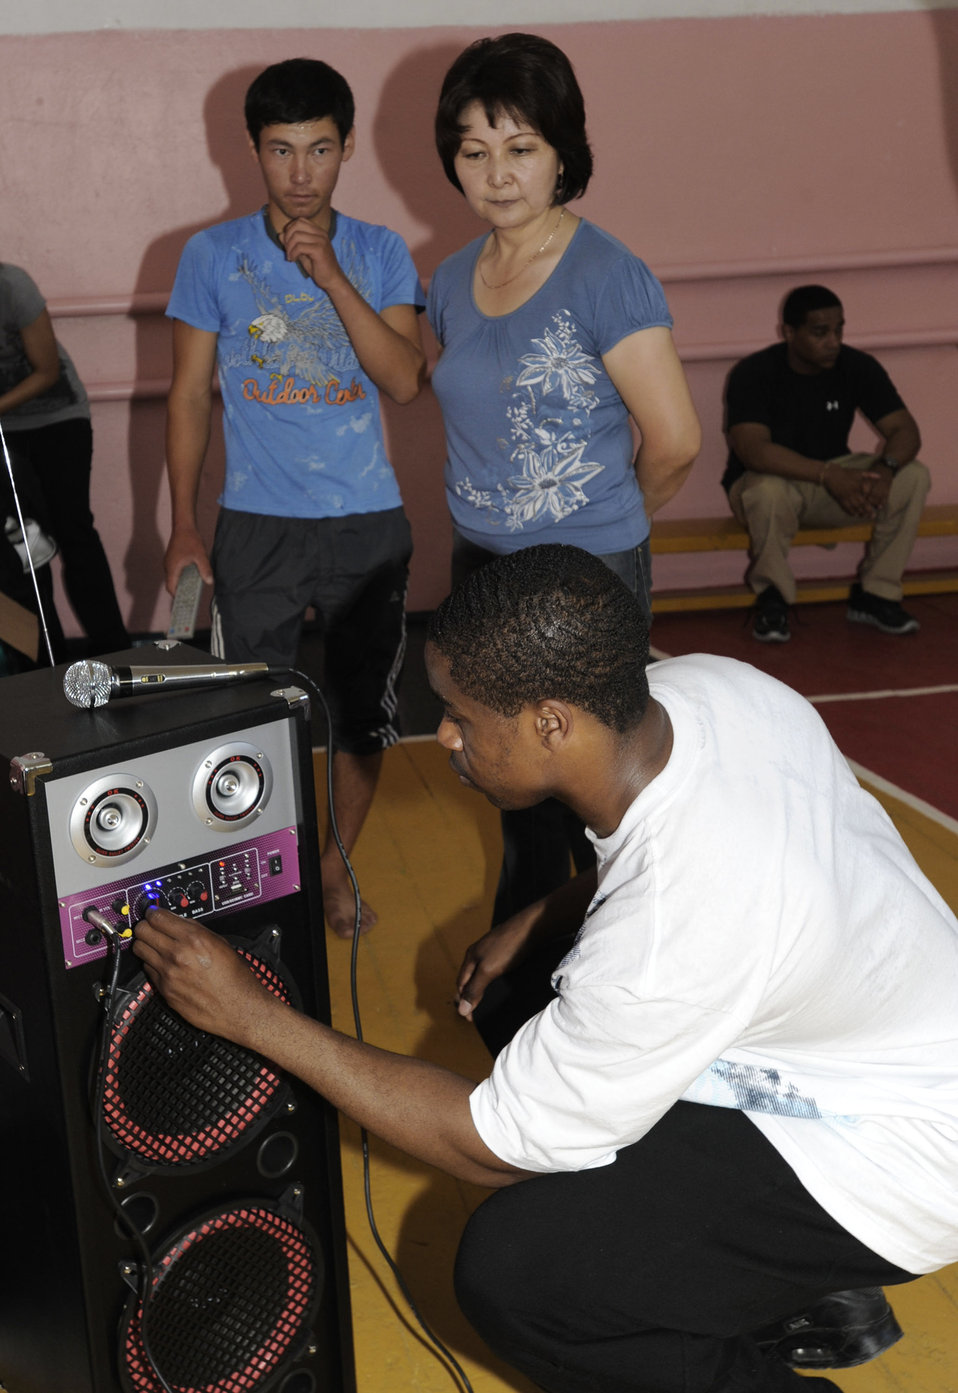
PA system to Kyrgyz school

Staff Sgt. Diamond Edwards demonstrates how to use a public address system July 1, 2011, the that 376th Expeditionary Communications Squadron donated to the school in Kamyshanvka, Kyrgyzstan. Airmen from the Transit Center at Manas spent the afternoon visiting with the village mayor and school staff and playing games with the students. Edwards is a communications project manager.